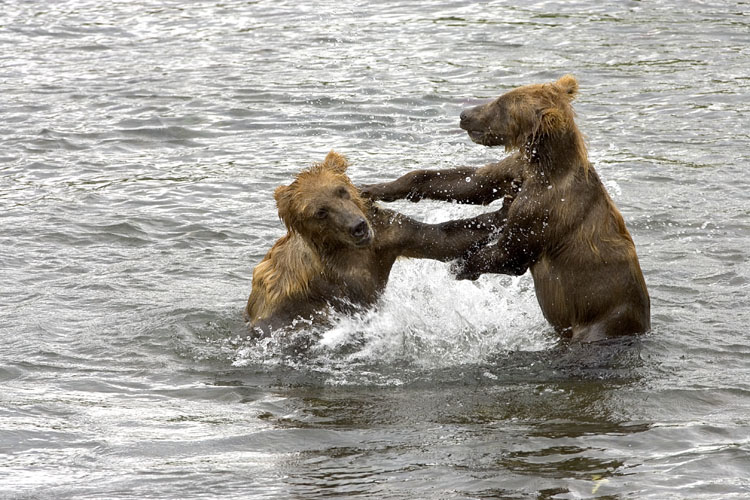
Kodiak Brown Bears

Playful Kodiak Bears